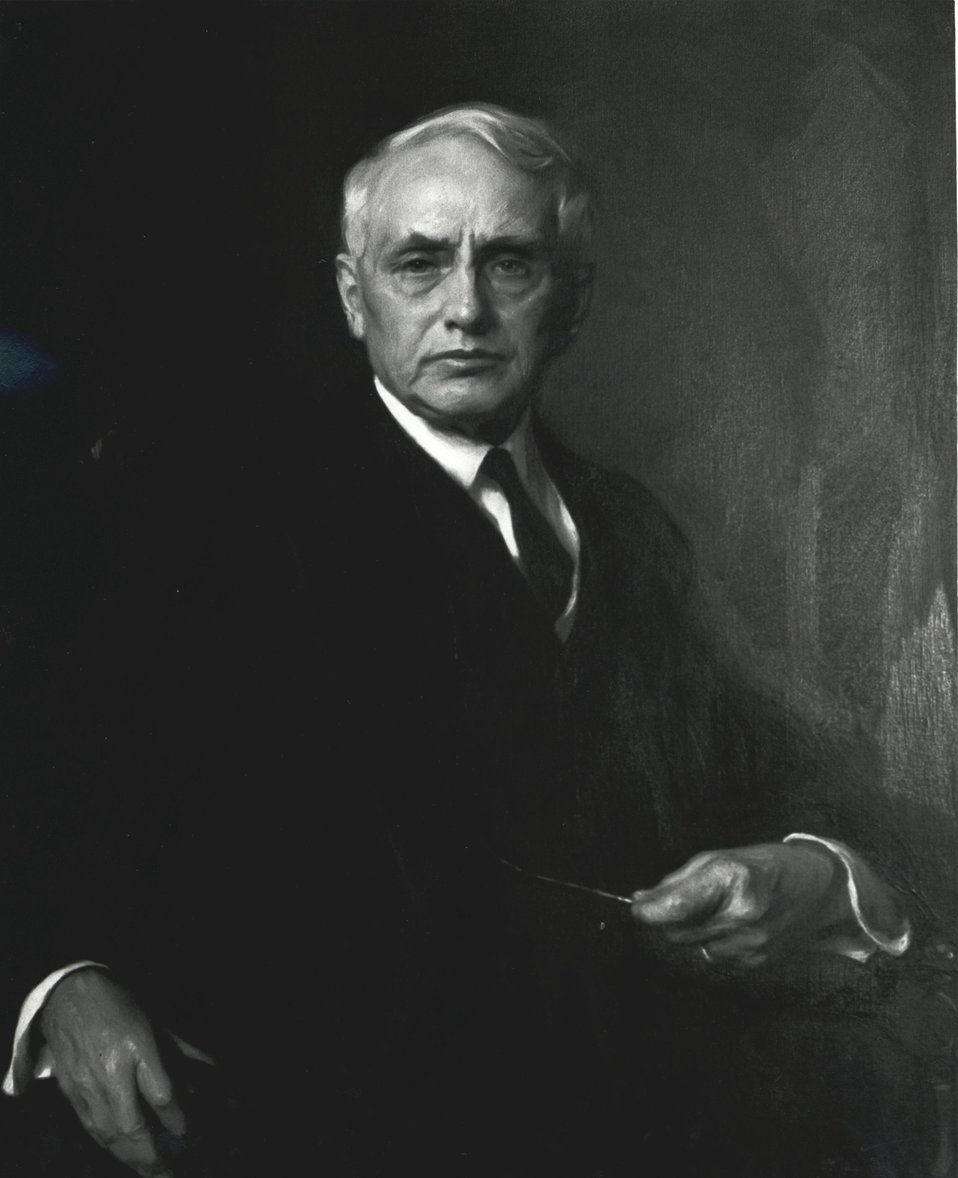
Frank B. Kellogg, U.S. Secretary of State, March 5, 1925 to March 28, 1929